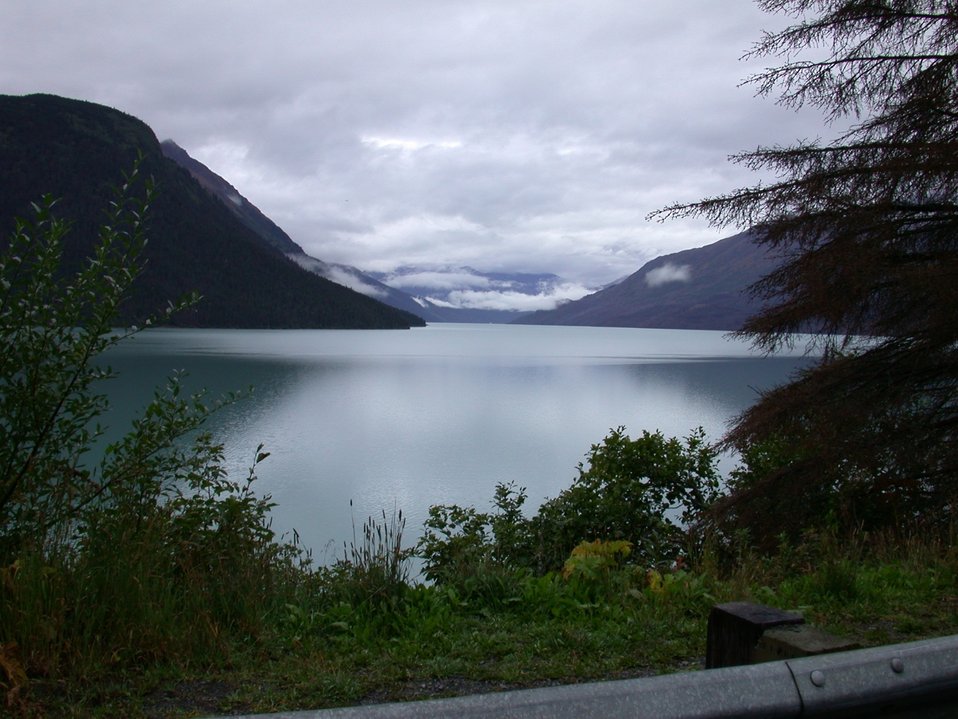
Turnagain Arm area between Anchorage and Seward.